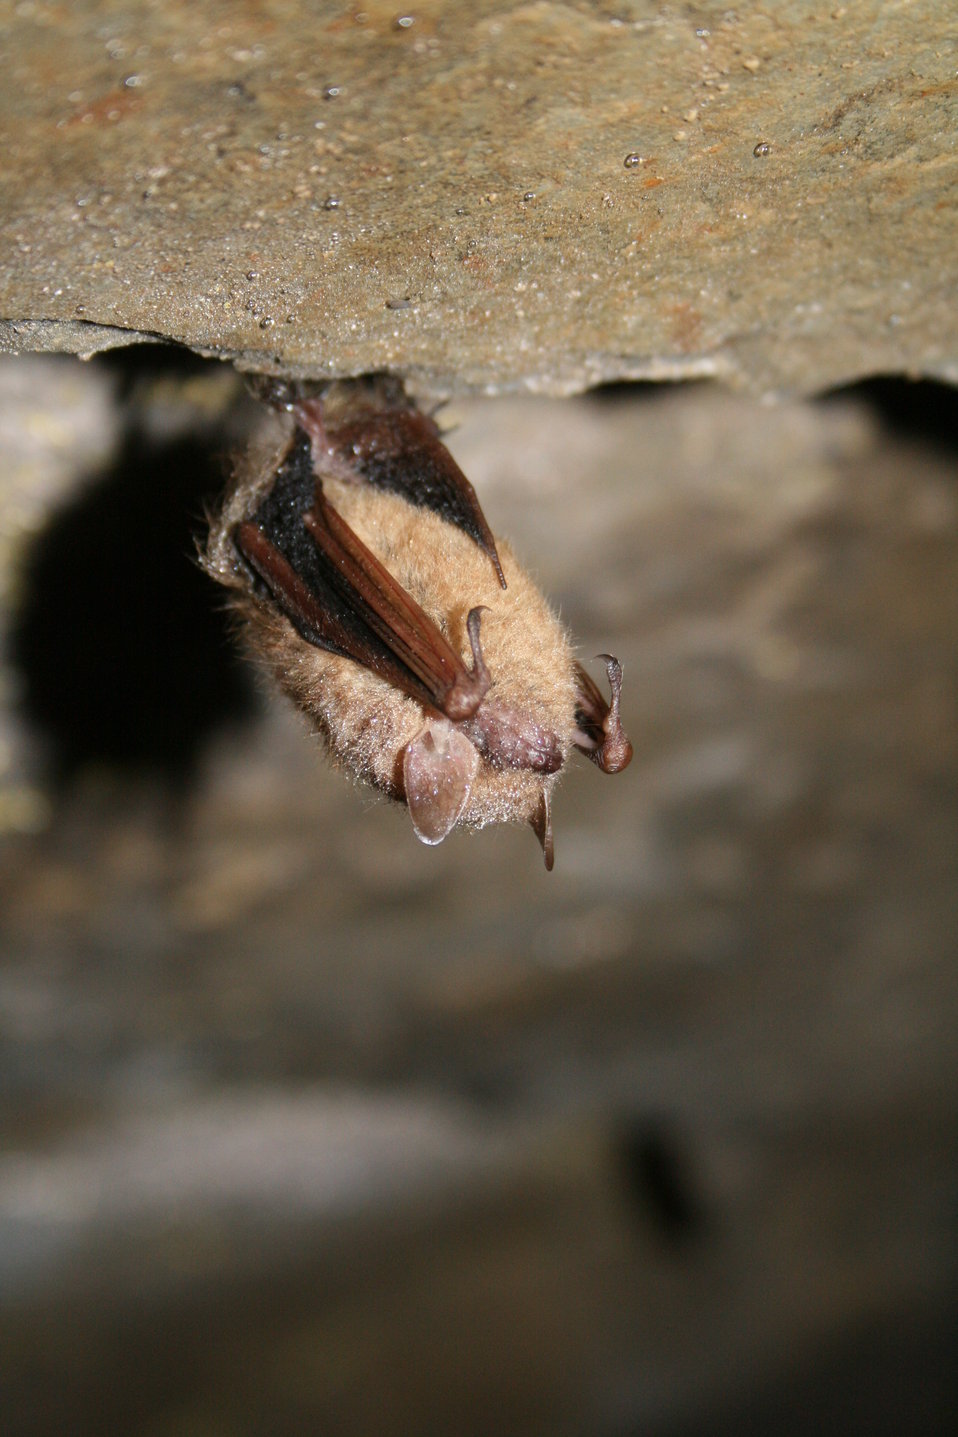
healthy Tri-colored bat

Perimyotis subflavus